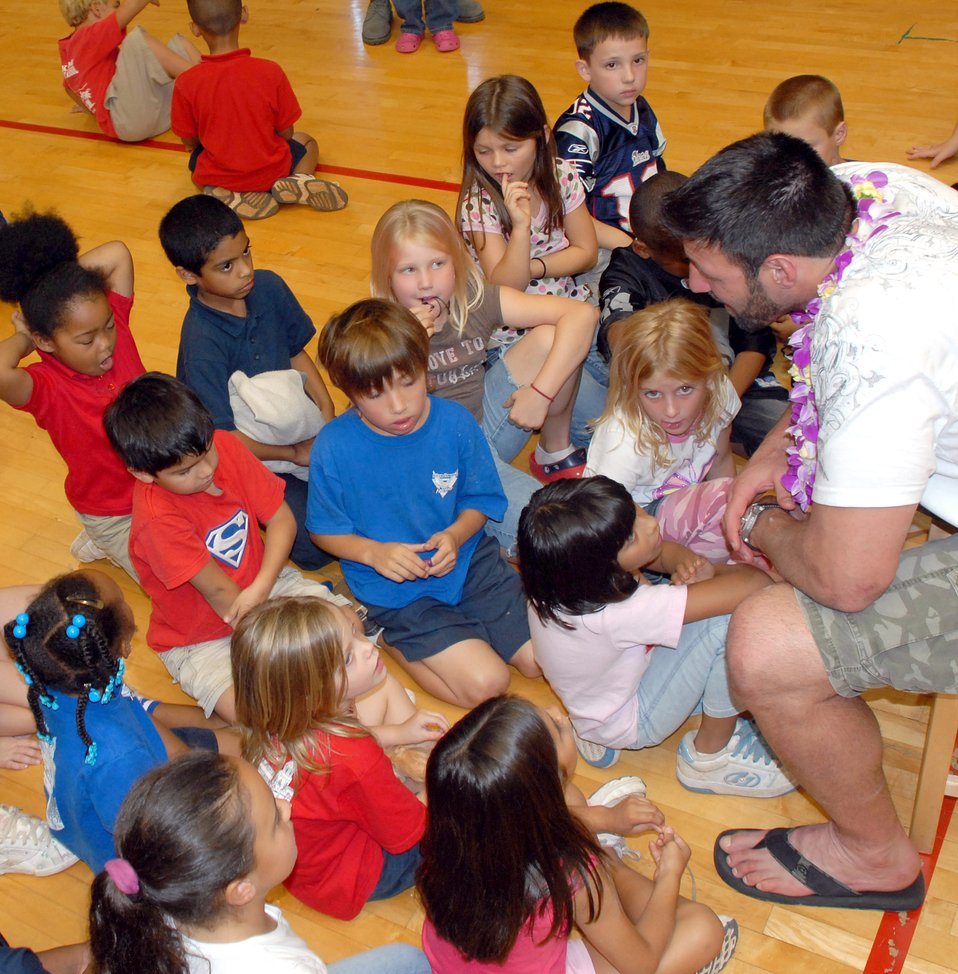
Airmen support Pro Bowl

New England Patriots outside linebacker Mike Varbel talks with children in the youth center's before and after school program during his NFL Pro Bowl player appearance Feb. 7 at the youth center at Hickam Air Force Base, Hawaii.